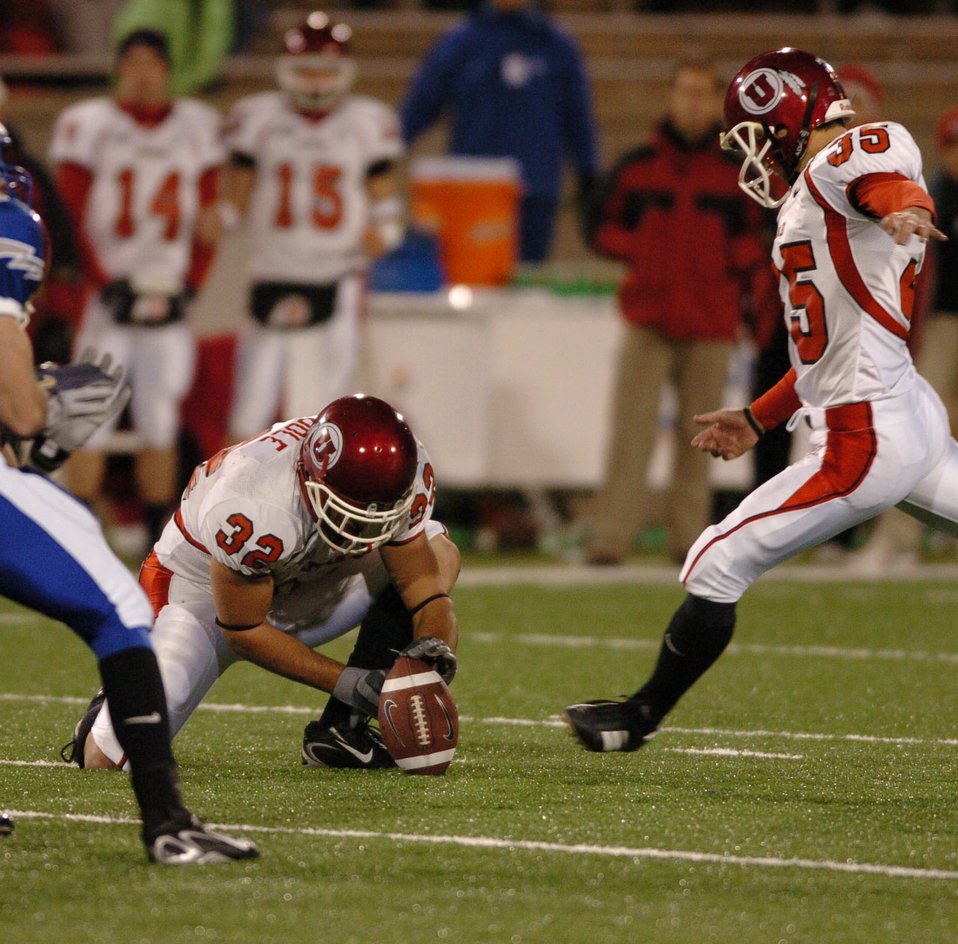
Game Winner

Air Force special teams player Garrett Rybak is unable to interfere with Utah's Louie Sakoda as he kicks a game-ending field goal to win the game for the Utes, 17-14.